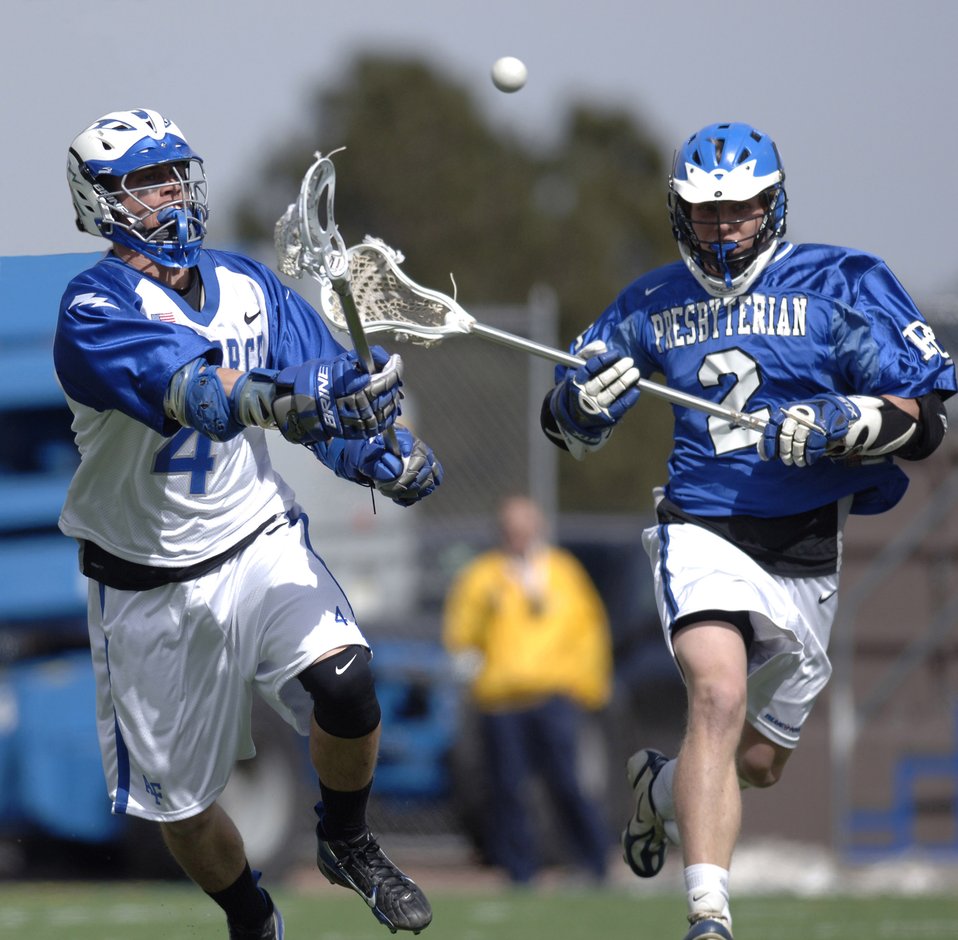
Falcons pick up 12-4 victory over Presbyterian

Air Force Academy junior Eric Evans fires a pass upfield. In this game March 25 at the Cadet Lacrosse Stadium in Colorado Springs, Colo., Air Force defeated Presbyterian College 12-4. The Falcons, undefeated at home, move to 2-4 on the season.